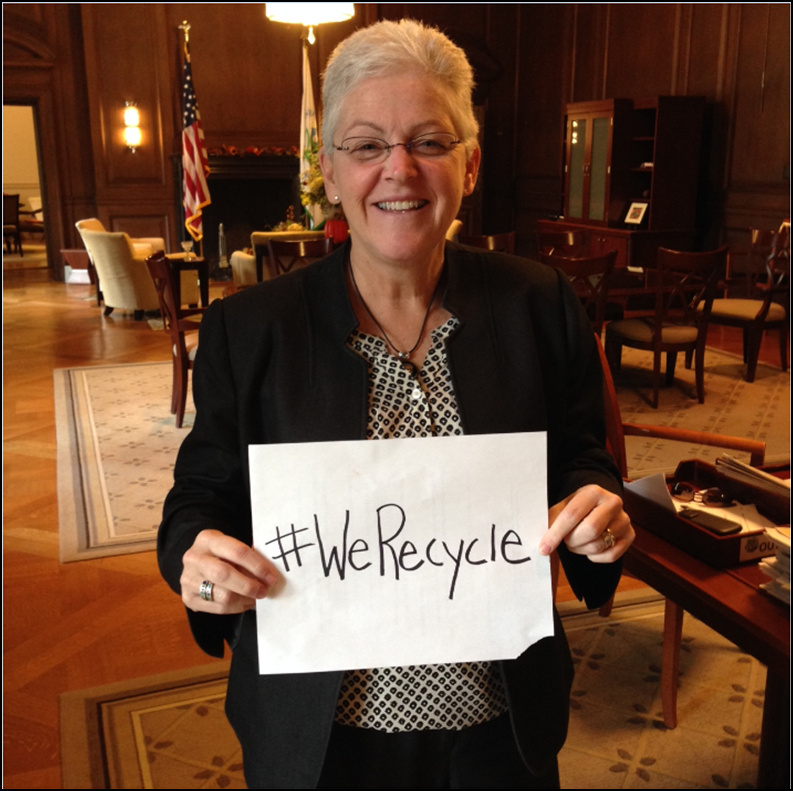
Administrator Gina McCarthy Recycles

At EPA, #WeRecycle. Learn how you can too: www2.epa.gov/recycle